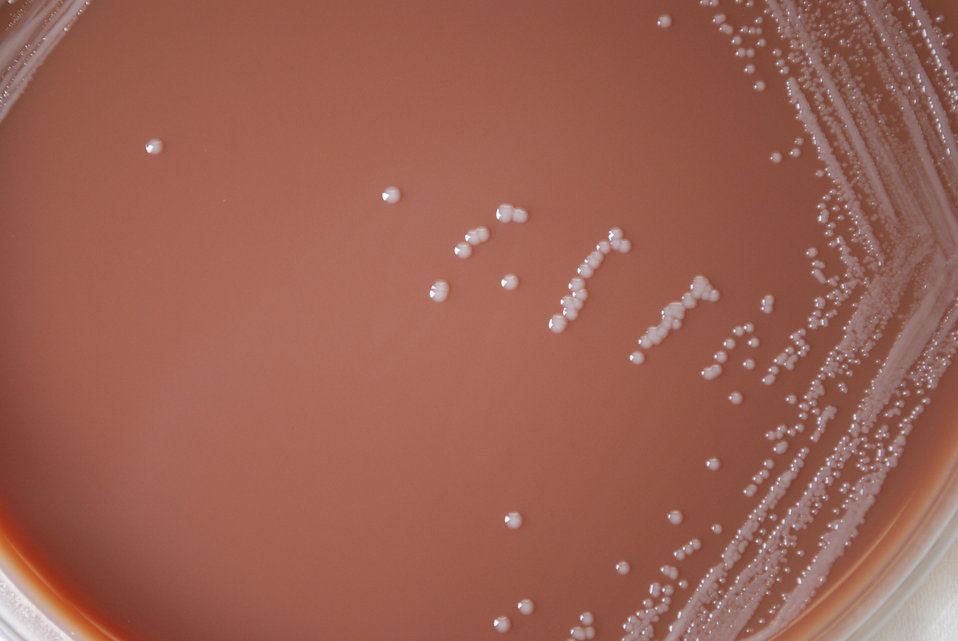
An enlarged view of PHIL 12286, this photograph depicts the colonial morphology displayed by Gram-negative Brucella abortus bacteria, which was grown on a medium of chocolate agar, for a 72 hour time period, at a temperature of 37�C. B. abortus bacteria cause the disease brucellosis.